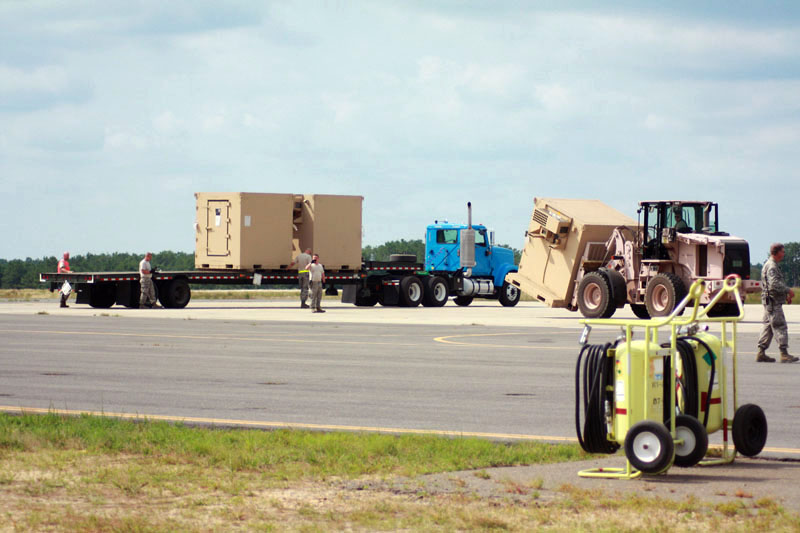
Eagle Flag

Soldiers and Airmen from exercise Eagle Flag offload pallets of food, water and shelter to be distributed July 27, 2010, to local villages in a simulated country needing humanitarian assistance at Joint Base McGuire-Dix-Lakehurst, N.J.